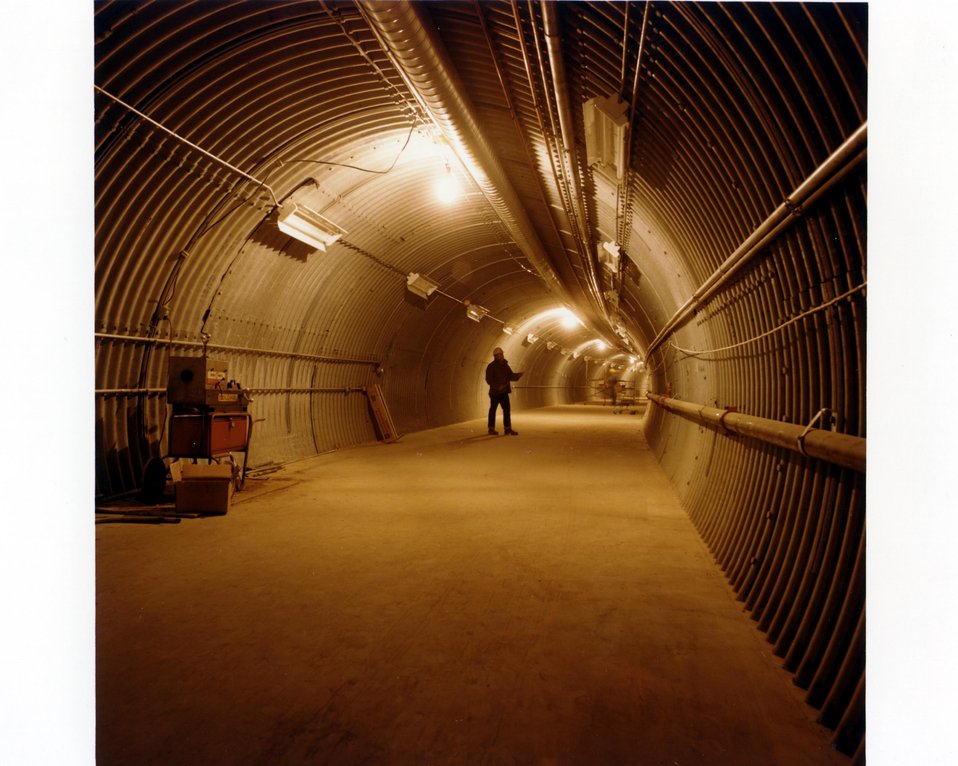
CBA, A PROTON-PROTON COLLIDING BEAM ACCELERATOR TO STUDY THE BASIC STRUCTURE OF ENERGY AND MATTER, IS BEING BUILT ON THE NORTHWEST QUADRANT OF THE 5,250 ACRE BROOKHAVEN SITE. THE FACILITY ITSELF IS AN UNDERGROUND CIRCULAR TUNNEL, WHICH IS 3.8 KILOMETERS IN CIRCUMFERENCE. TWO RINGS OF SUPERCONDUCTING MAGNETS WILL BE INSIDE THE TUNNEL. PROTON BEAMS WILL BE INJECTED INTO THE TUNNEL AND ACCELERATED TO ENERGIES UP TO 400 GEV. AT SIX PLACES ALONG THE TUNNEL, THE BEAMS WILL COLLIDE. EXPERI- MENTAL HALLS, WHICH ENCLOSE THESE SIX INTERSECTIONS, WILL HOUSE EQUIPMENT FOR STUDYING THE RESULTS OF THE COLLISIONS.